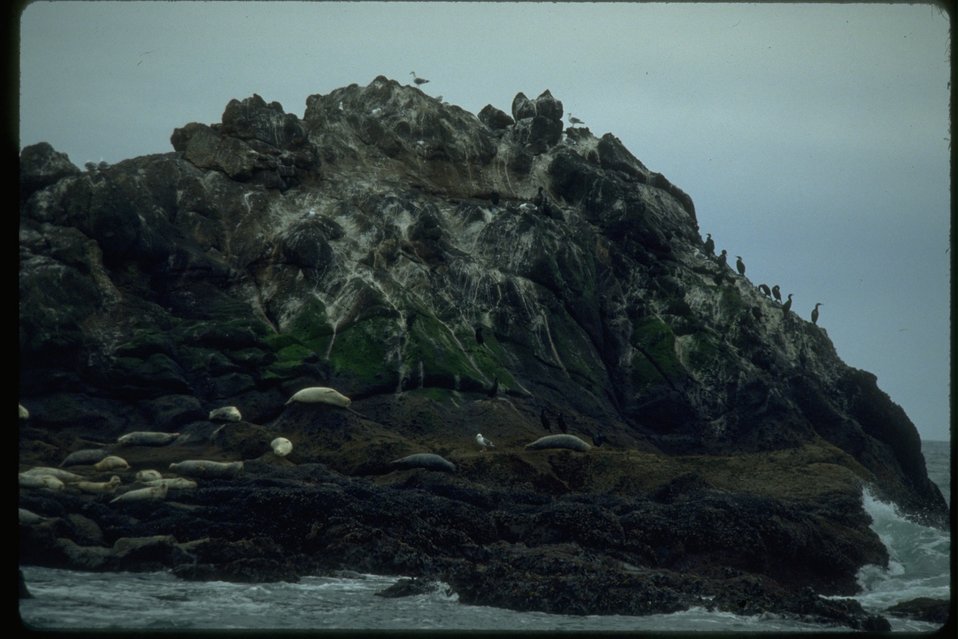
Pacific Harbor Seals and Cormorants on Seal Island at Yaquina Head ONA.